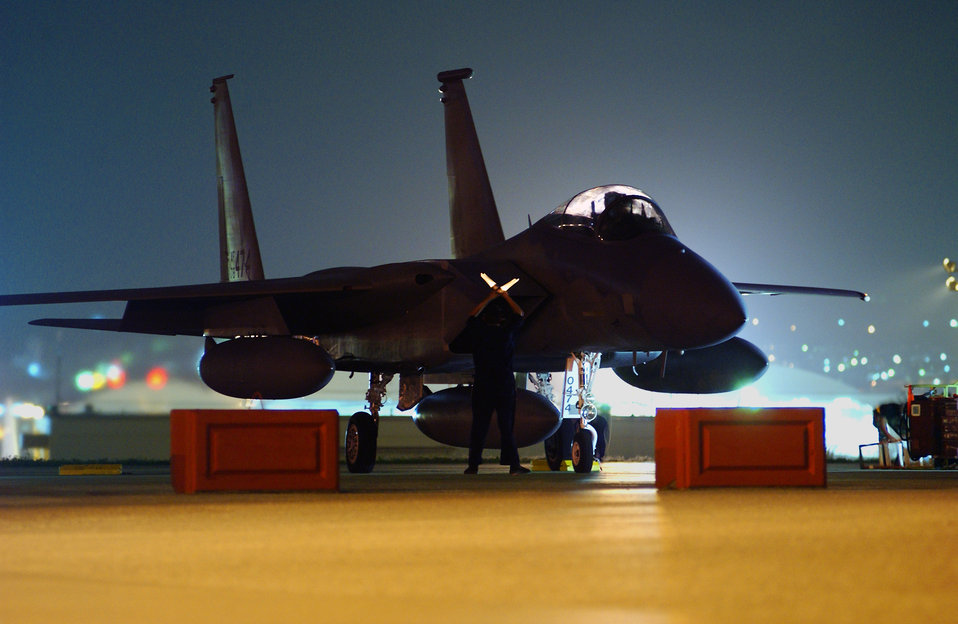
Iron Flow program concludes at Kadena

A Kadena Air Base crew chief prepares to marshal out an F-15C Eagle during the early morning hours at Kadena Air Base, Japan, April 23 before its departure to the U.S., symbolizing the end of the Iron Flow program here. The aircraft was one of three jets that left to be transferred to Air National Guard units under Iron Flow which exchanged Kadena's older F-15's with newer models from other active- duty bases. All newer jets have been received and these were the last three older aircraft to be turned in.